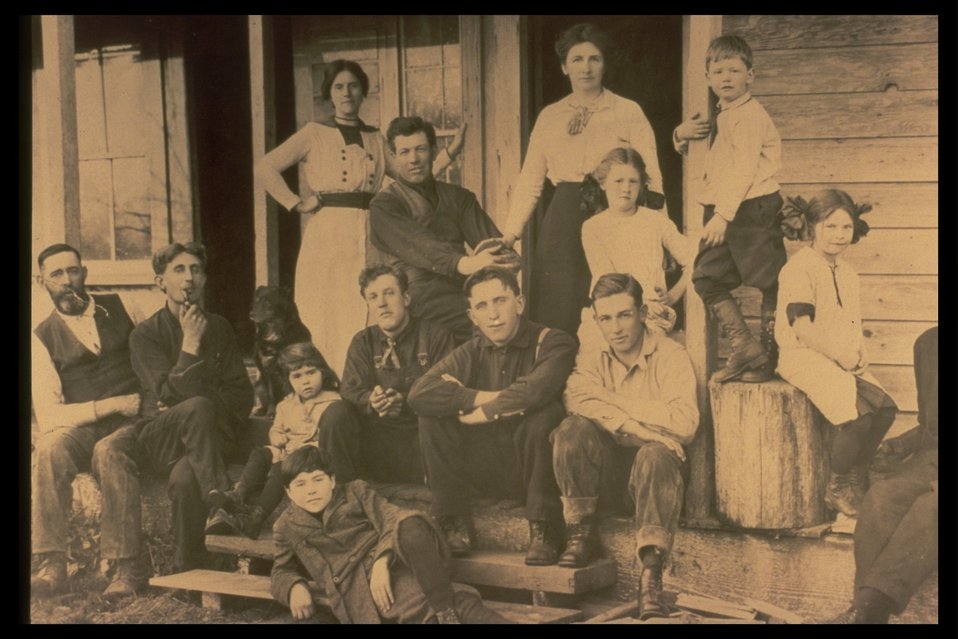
Black and white photo of a pioneer famil posing on a porch.